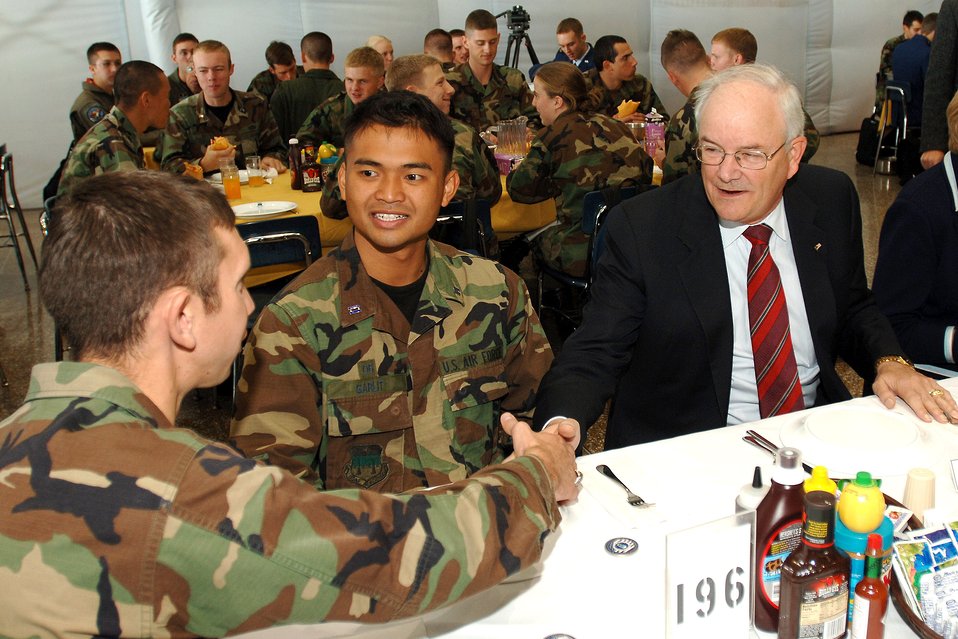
SECAF visits Academy

U.S. AIR FORCE ACADEMY, Colo. (AFPN) -- Cadet 1st Class Josh Lewis introduces himself to Air Force Secretary Wynne. The new Air Force secretary ate lunch at Mitchell Hall with Cadet Lewis, Cadet 1st Class Larry Garlit and the rest of Cadet Squadron 33 after the ceremony here.